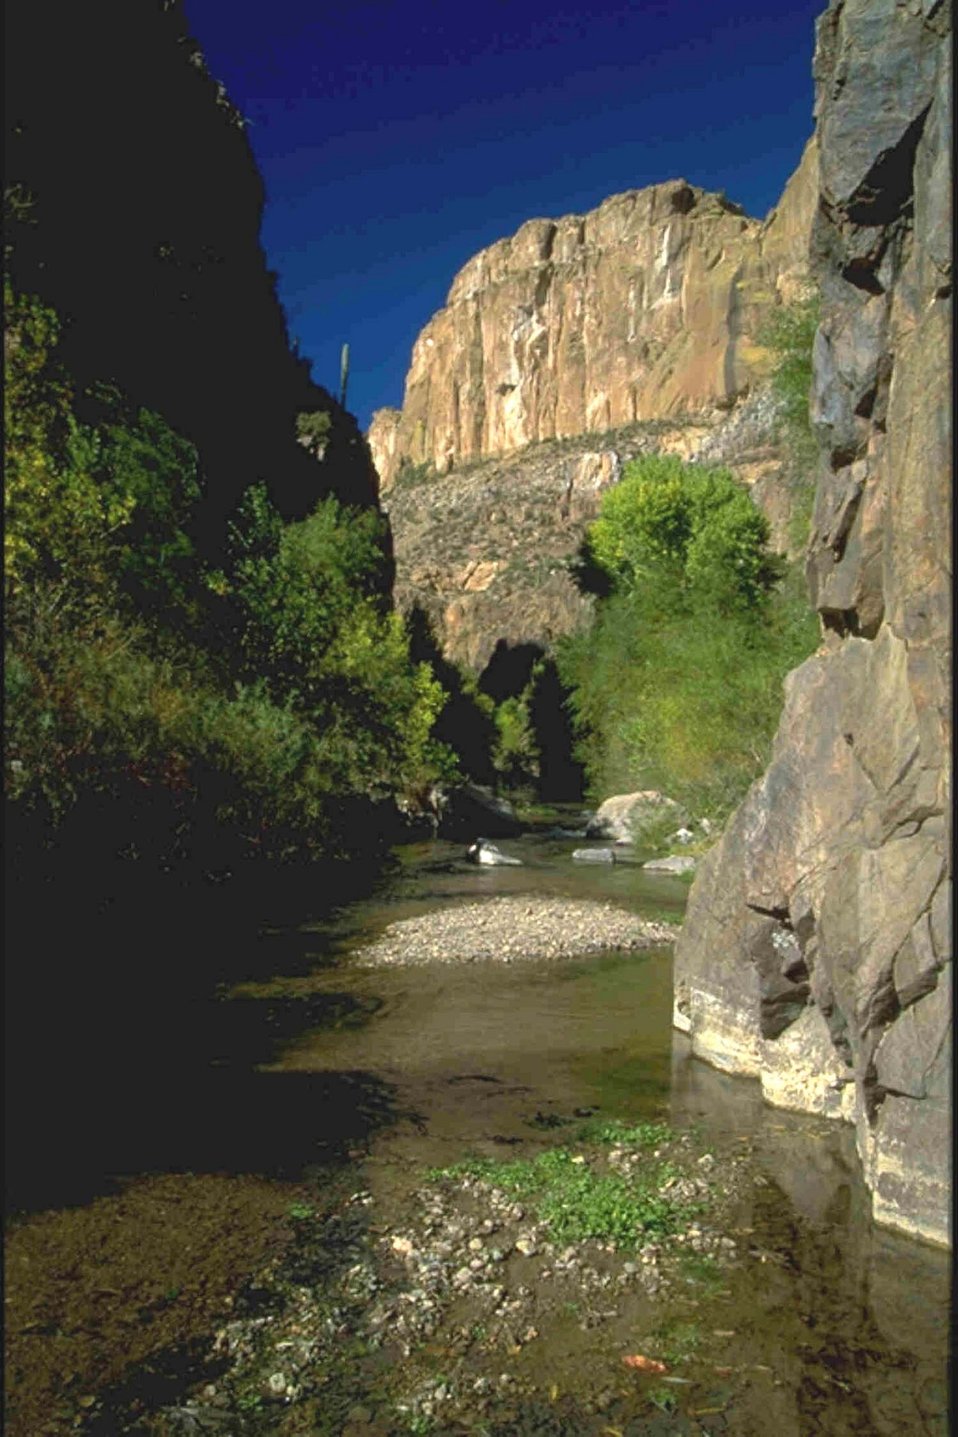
The canyon walls squeeze in on the creek in the Narrows of the western end.